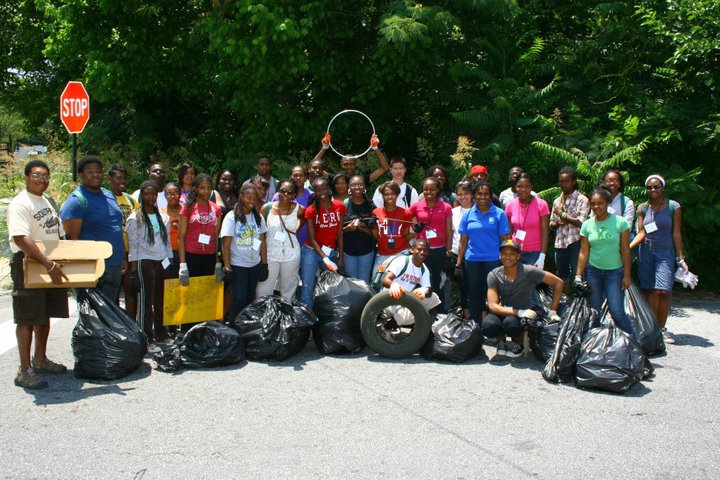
Youth working on waste cleanup